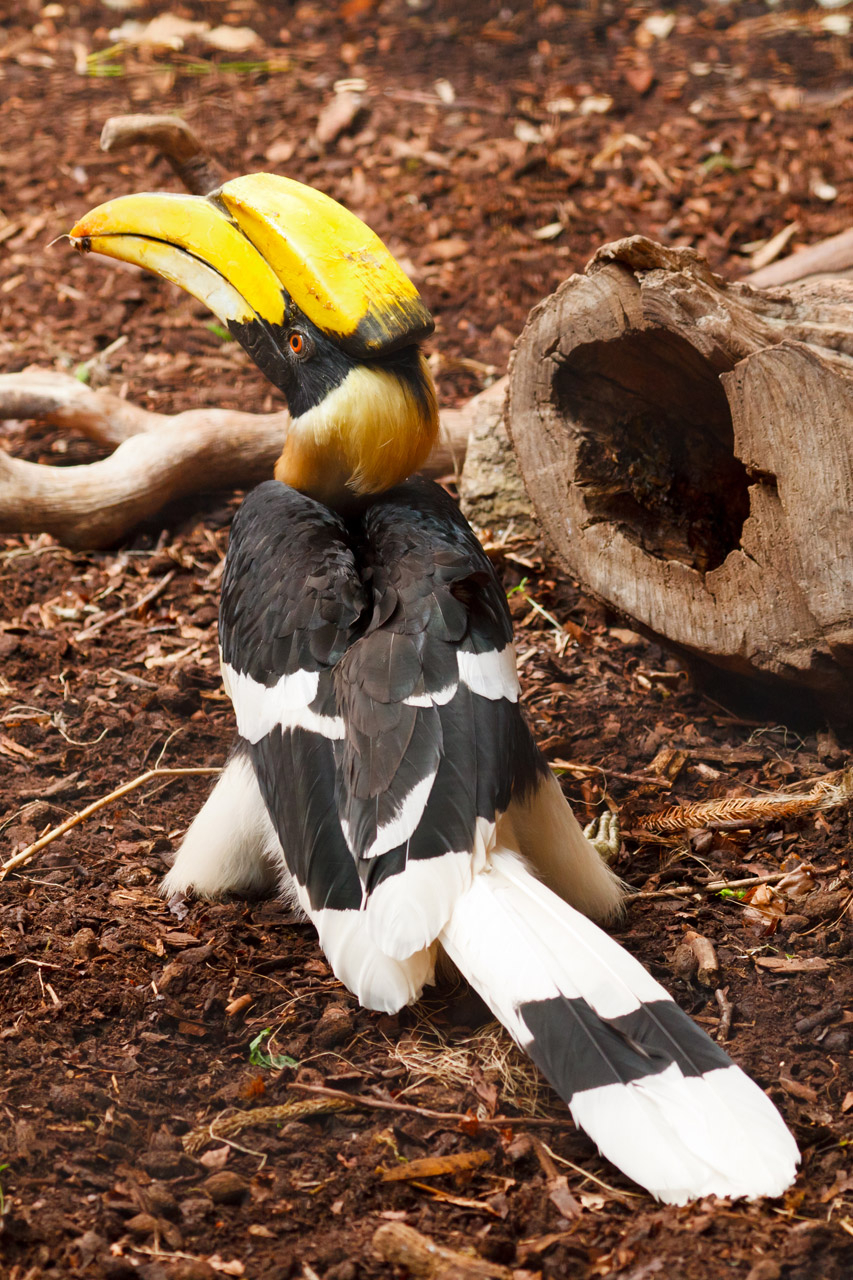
Great hornbill bird.